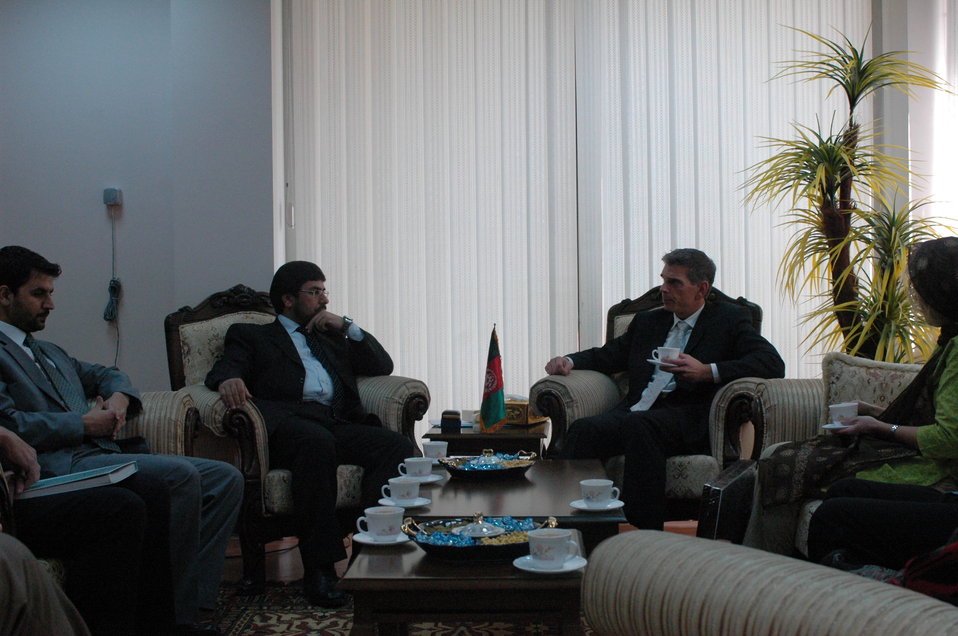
Community Based Stabilization Grants Ceremony, December 7, 2010